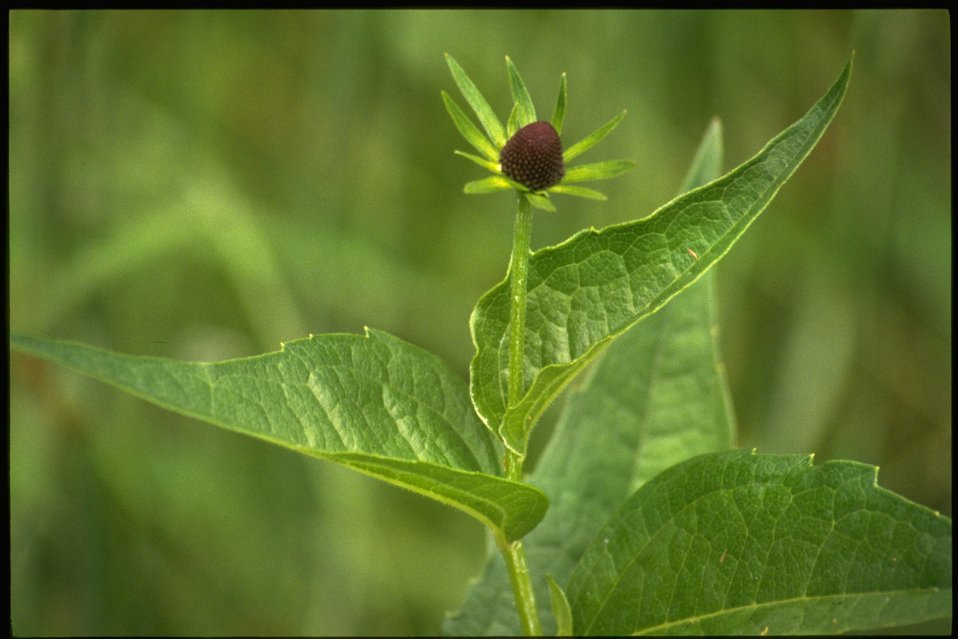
Medium shot of Rudbeckia occidentalis.